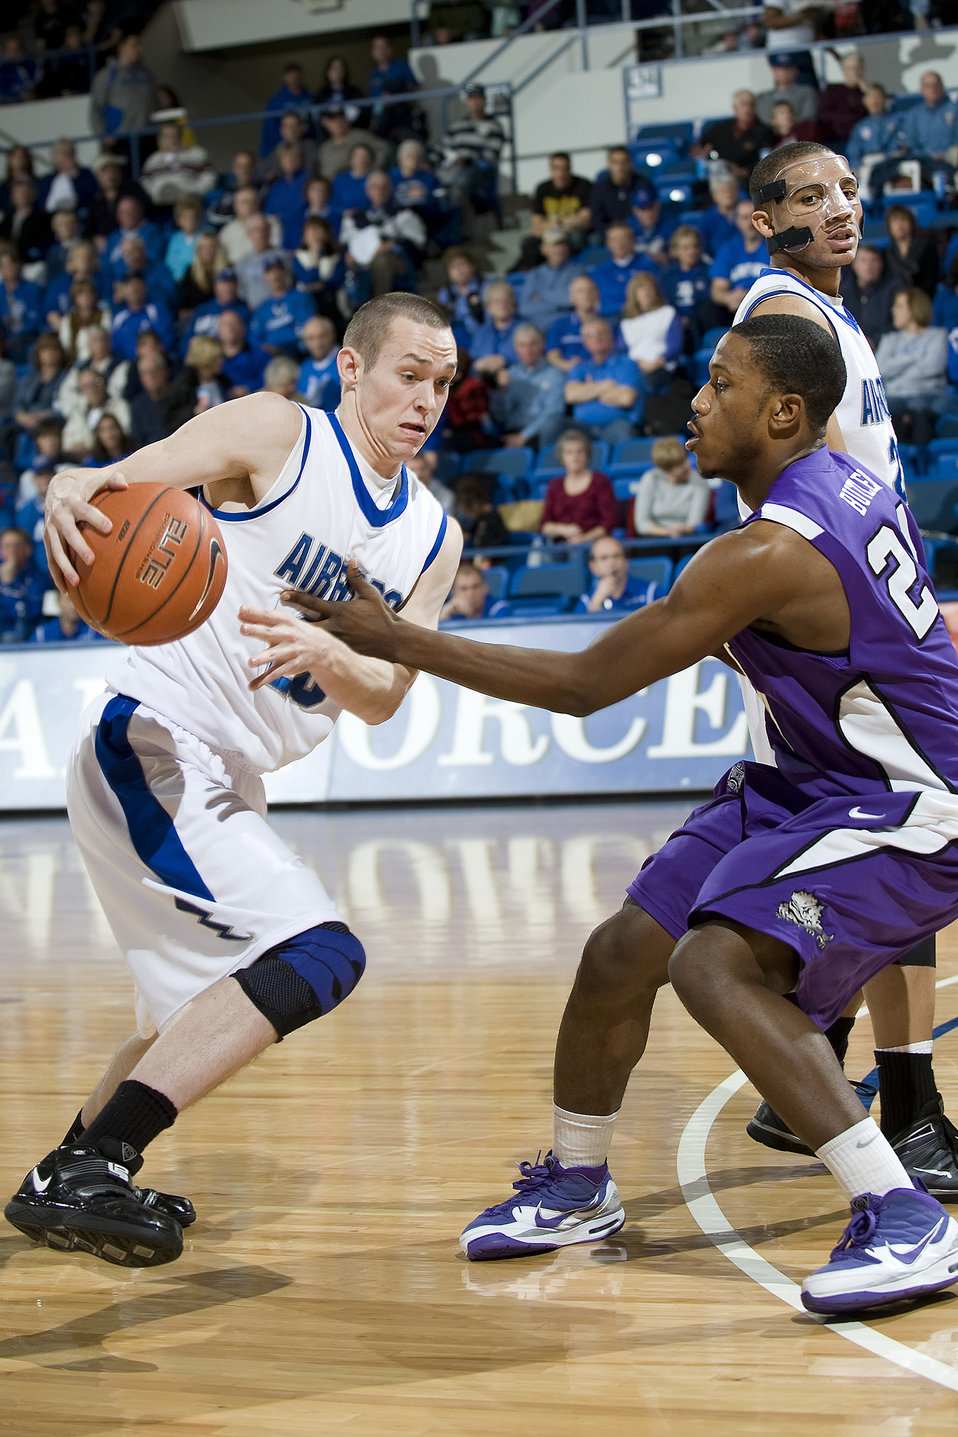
Horned Frogs surpass Falcons

Falcon junior forward Tom Fow drives past defender Keion Mitchem as Air Force goes against Texas Christian University Feb. 6, 2010, at the U.S. Air Force Academy's Clune Arena. The Falcons fell short of their goal, losing to TCU by a score of 65-51.